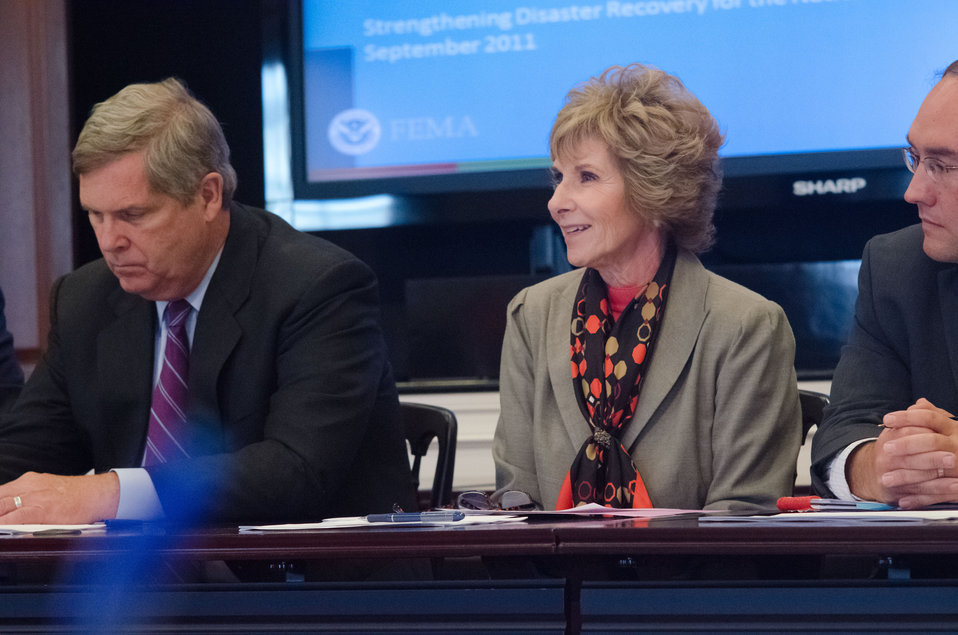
Federal Disaster Recovery Coordinator Colleen Callahan, speaks about the continuing drought in rural America during the White House Rural Council chaired by Agriculture Secretary Tom Vilsack at the White House in Washington, D.C. on Friday, Oct. 5, 2012. The White House Rural Council discusses recent White House announcements and Secretary Vilsack asked council members to outline their work plan for the coming months.